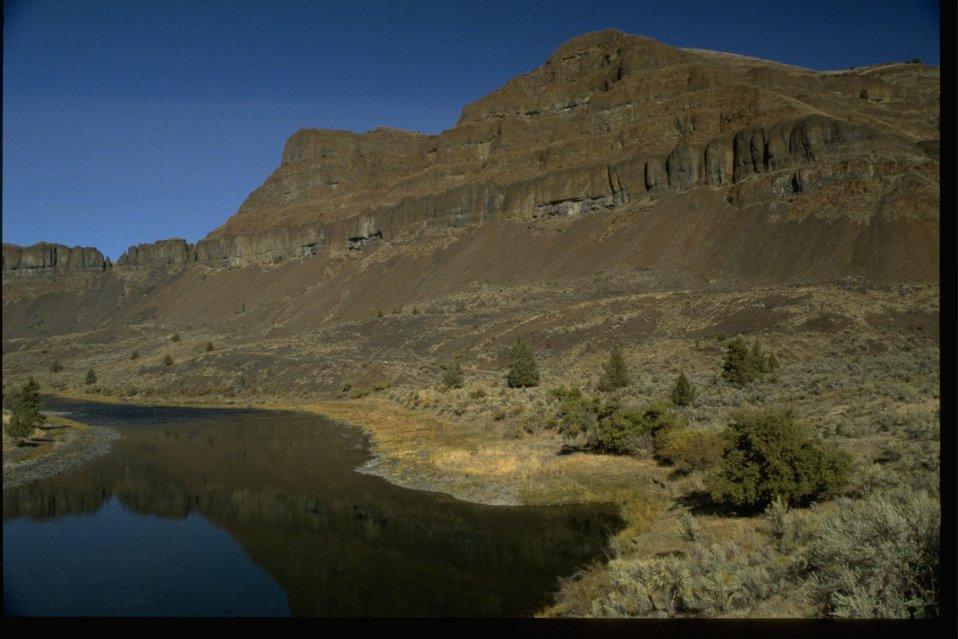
Cliffs above the John Day River.